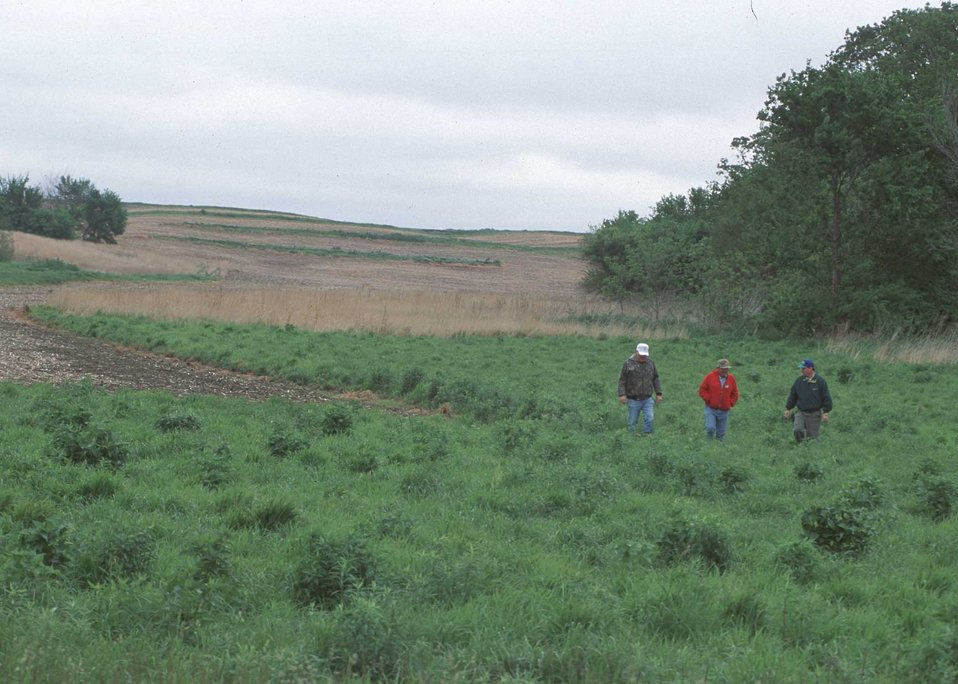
NRCS walks with the landowners on their family farm in Peoria County, Illinois. Many conservation practices have been installed on the farm which is used to teach local students and residents the values of the agriculture and the benefits it offers wildlife.